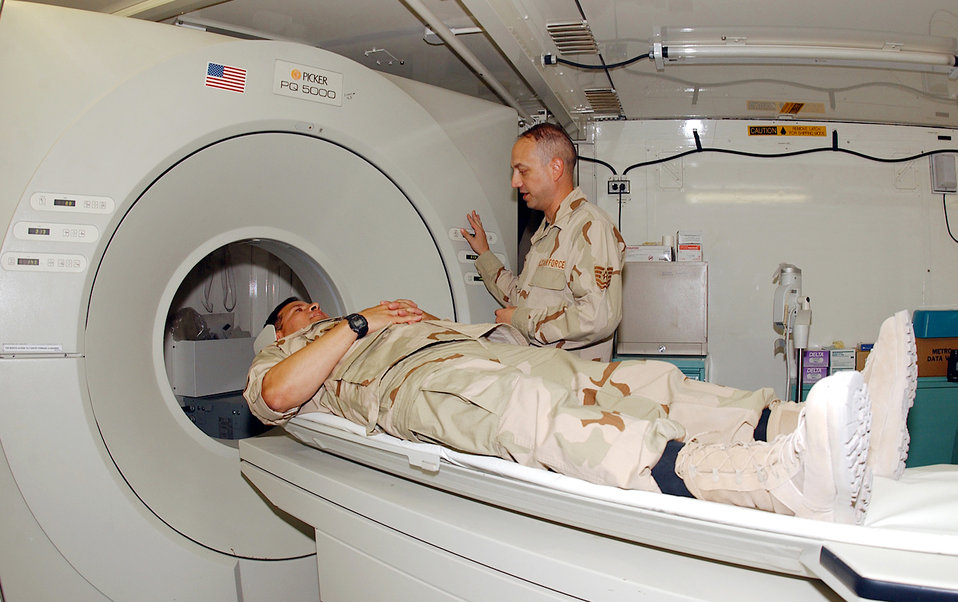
CT-scan basics

AL UDEID AIR BASE, Qatar -- Tech. Sgt. James Doto explains the CT-scan process to a patient. Doto is the noncommissioned officer in charge of radiology for the 379th Medical Group here. The group is the Air Force's digital radiology hub in the region.